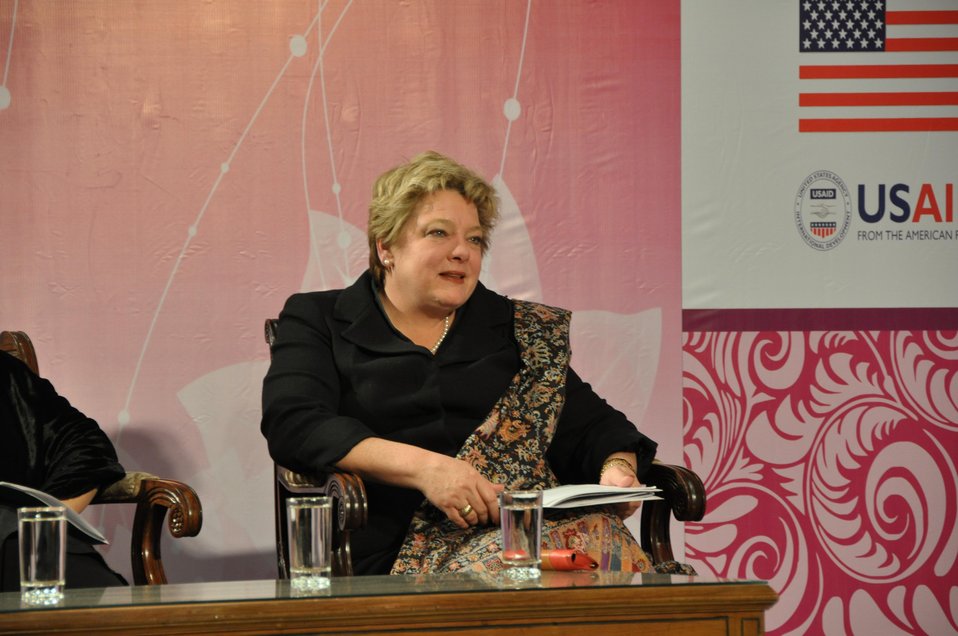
International Women’s Day

Islamabad, March 08, 2012 - The United States Agency for International Development (USAID) celebrated International Women’s Day, hosting a panel discussion with women entrepreneurs.
Panel members in addition to USAID’s
- Karen Freeman
- Wajeeha Nasreen, Sr. Product Development Manager, Gul Ahmed (famous Pakistani fabric brand)
- Dr. Nosheen, CEO, Generations (famous clothing brand)
- Razia Zubairi, Director General, Technical Education and Vocational Training Authority, Punjab
- Shaheen Khan, Sales Agent, ECDI, USAID sub-grantee